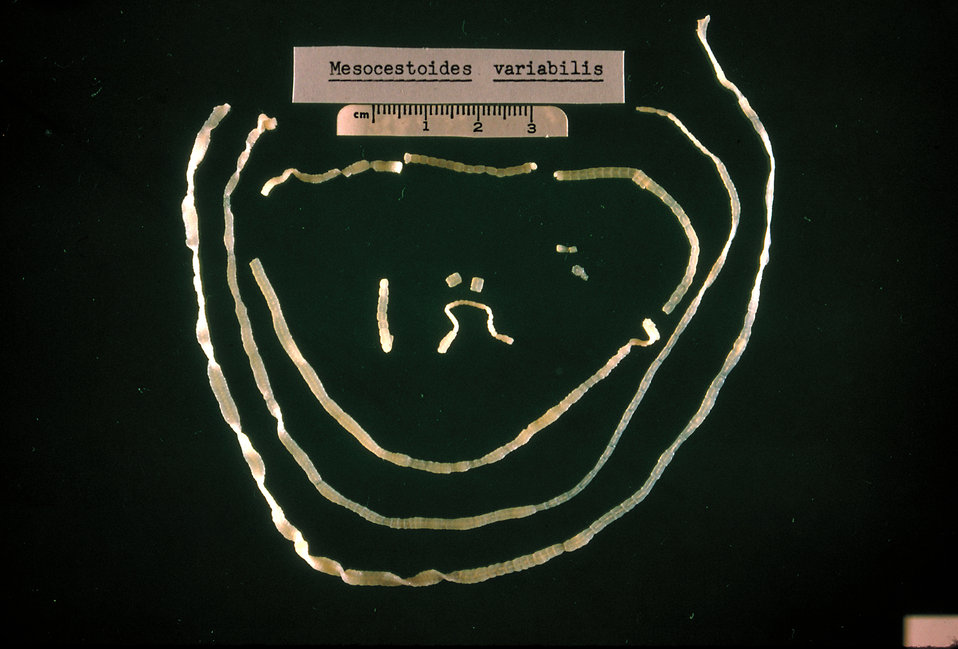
This is a mature tapeworm, Mesocestoides variabilis, taken from an 18 month old child.